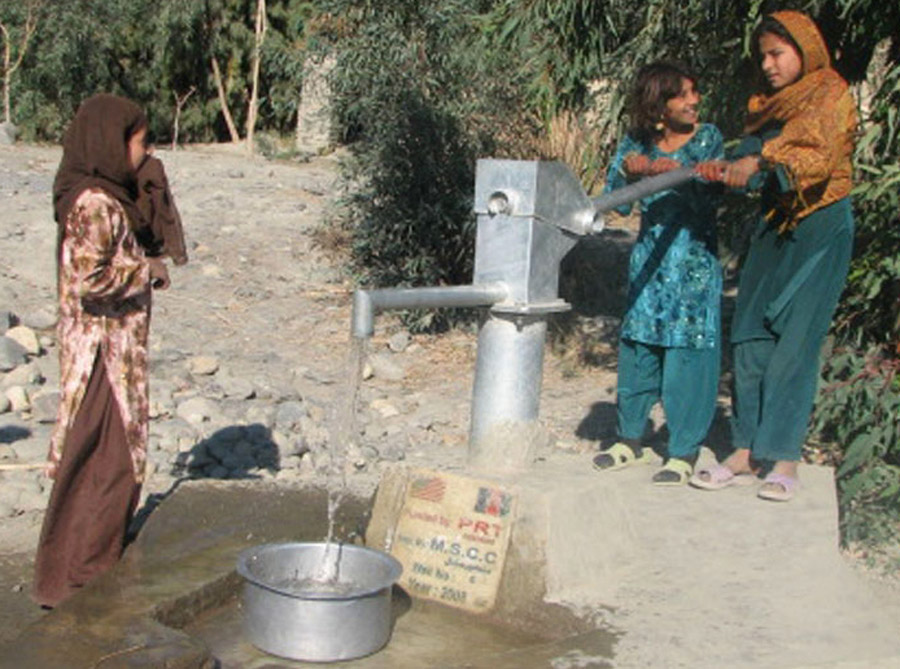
Well project brings water to Afghan villages

Afghan girls draw water from a recently completed village well in the Kuz Konar district of Afghanistan's Nangarhar Province. The Nangarhar Provincial Reconstruction Team completed an eight-well project that will bring a vital water source to thousands of people in six districts.